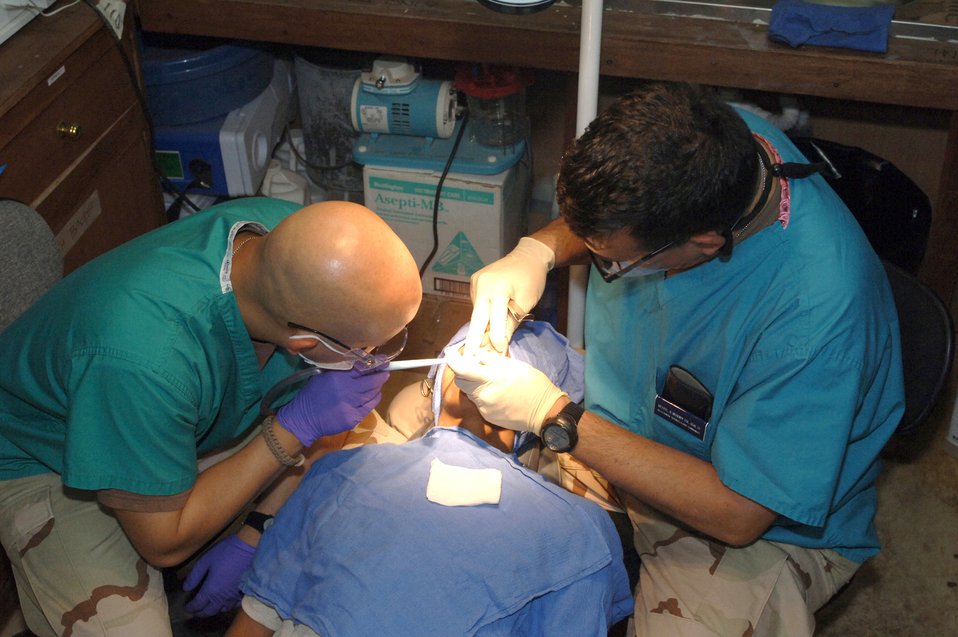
Dentist, technician contribute to Iraqi security

Col. (Dr.) Michael McHenry (right) extracts a tooth from an Iraqi patient at a medical clinic for Iraqi national police at the Victory Base Complex outside Baghdad, Iraq, on Wednesday, June 14. The colonel and his technician, Staff Sgt. Jose Cano, are deployed from Lackland Air Force Base, Texas.